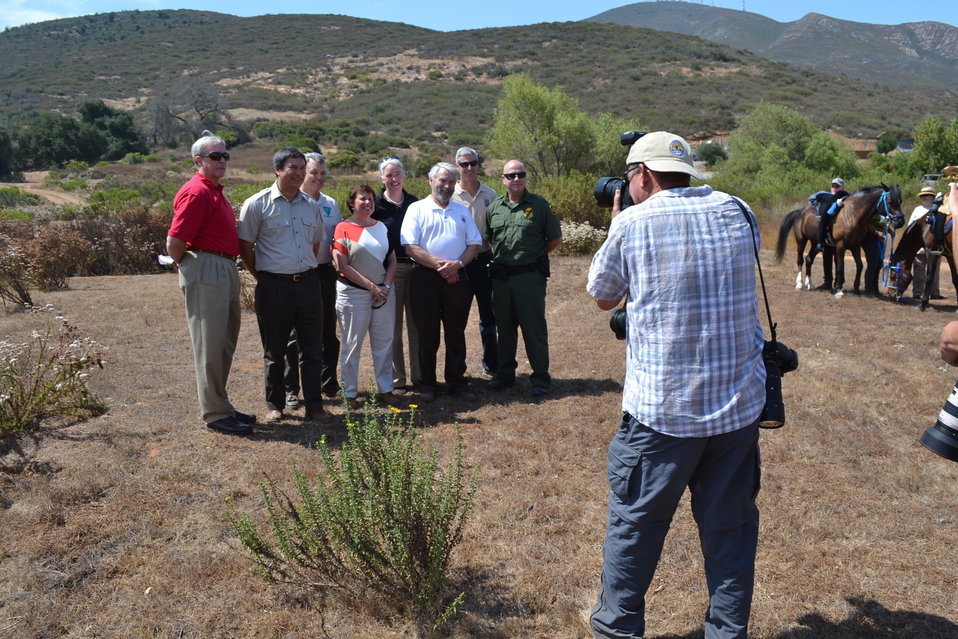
Hidden Valley Ribbon Cutting

(USFWS)